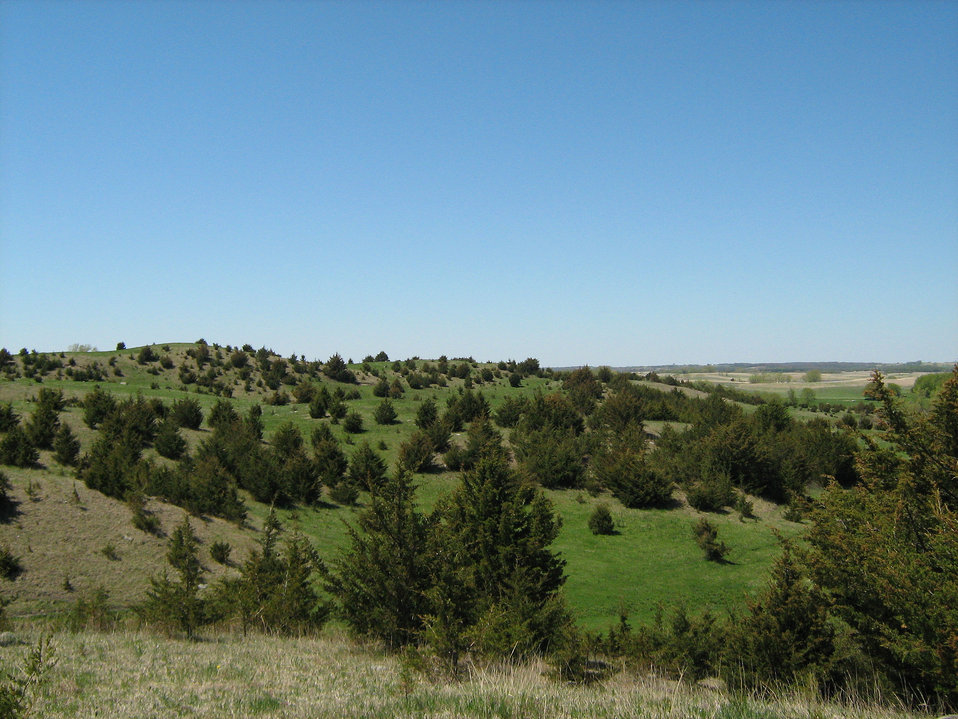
Rested pasture before tree removal in 2011.